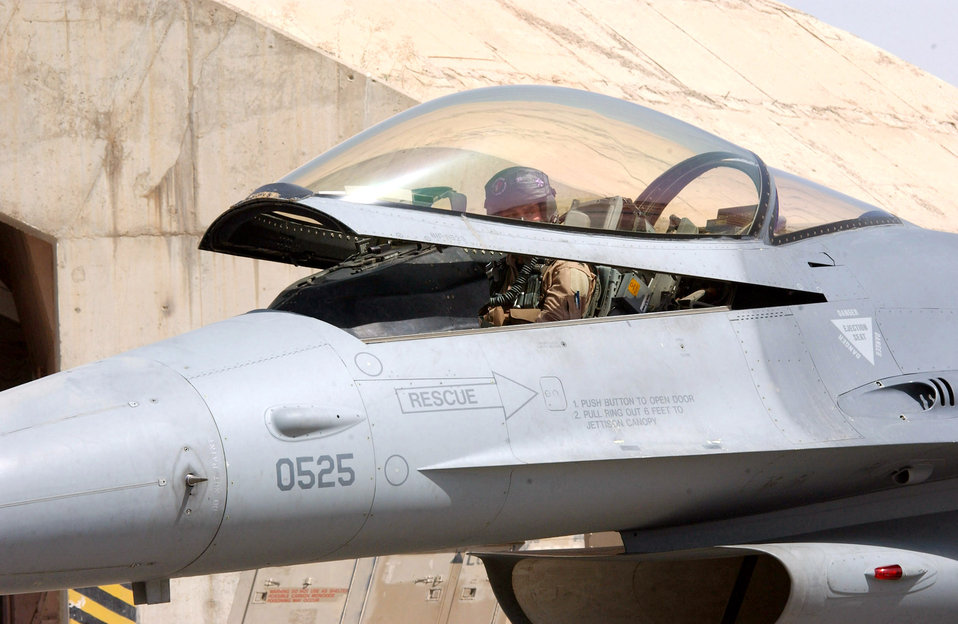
F-16 pilots provide support for troops on the battlefield

BALAD AIR BASE, Iraq -- Following his preflight checks, 1st Lt. Christopher Jones closes the canopy to his aircraft before a mission supporting Operation Iraqi Freedom. He is an F-16 Fighting Falcon pilot with the 510th Expeditionary Fighter Squadron.